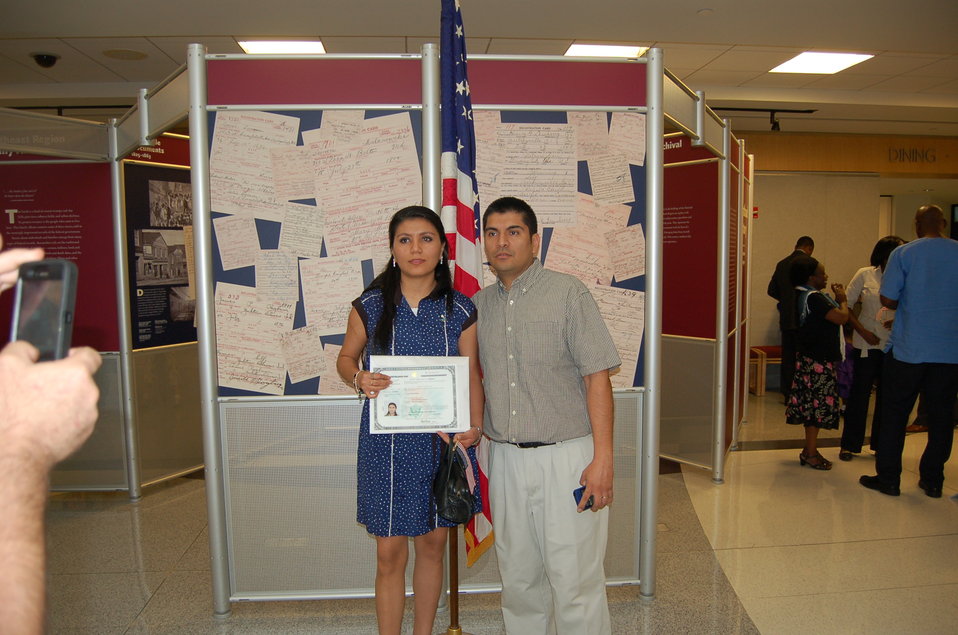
New Citizens